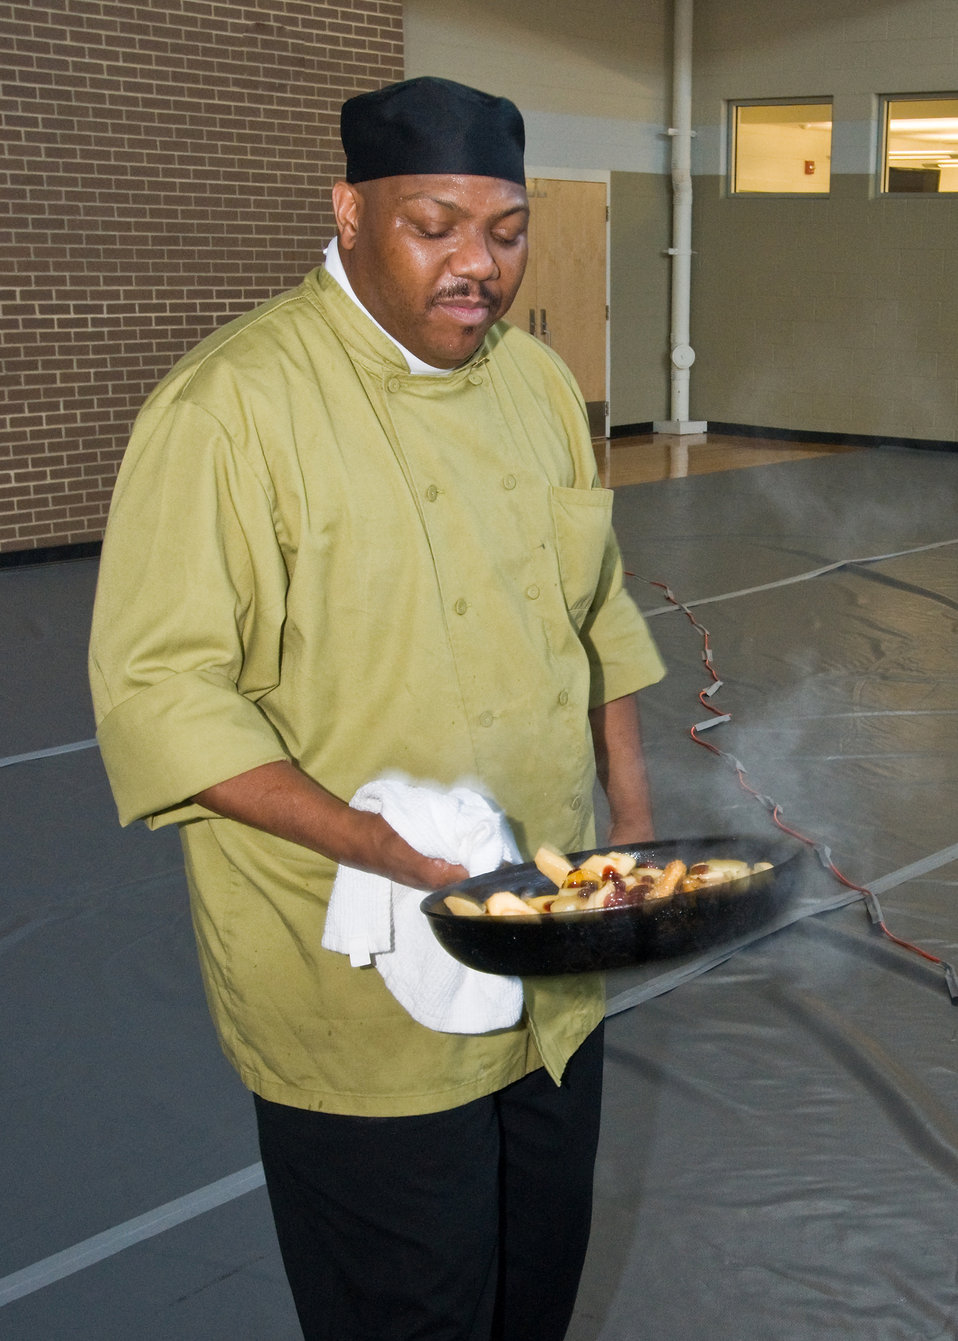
Chef Terrell Danly, 'Station 9' and 'Salt and Pepper Chef’s. com' flips 'Apple Cranberry Crisp' for the Chef Competition of the D.C. Farm to School and D.C. School Garden Week at the Savoy Elementary and Thurgood Marshall Academy shared campus in Washington, DC, Tuesday, October 12, 2010. At the event related to the Iron Chef competition local chef’s and student sous chef’s created healthy, delicious recipes using local apple varieties to be judged by the students themselves. School children and a partnership of community organizations have responded to First Lady Michelle Obama’s goal to end childhood obesity by building school gardens, providing healthier foods in school meals, and helping kids connect with local food and agriculture. USDA Photo 10di1522-51 by Bob Nichols.